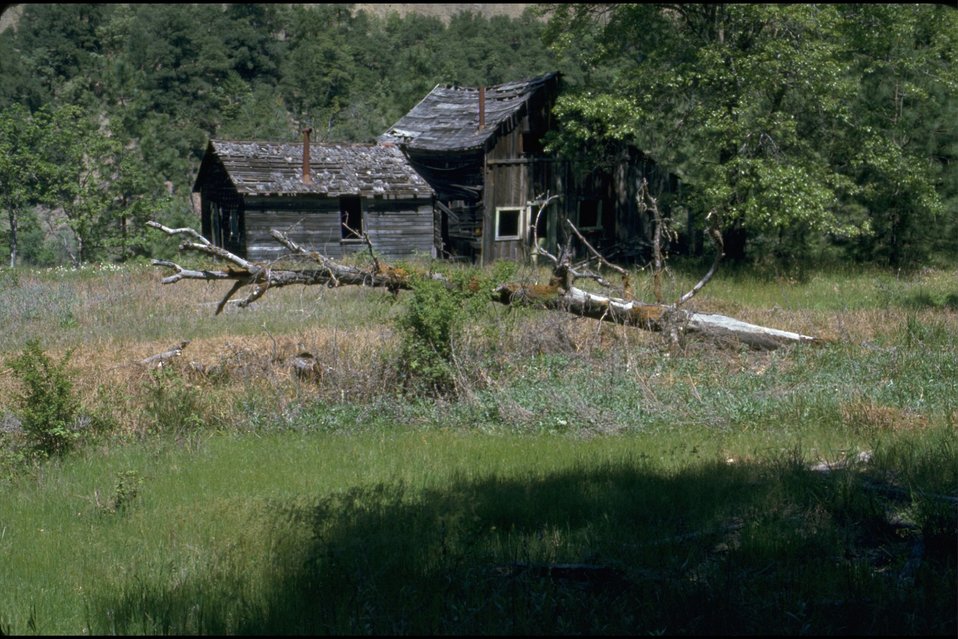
Rogue River - Hellgate Recreation Area. Old farm house (Dean Placer?).